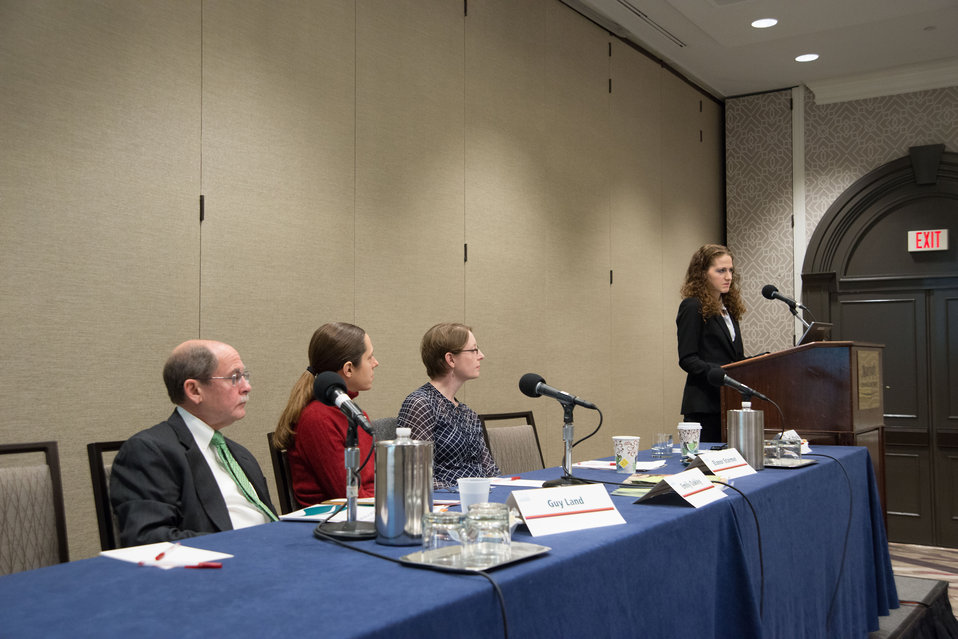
U.S. Department of Agriculture (USDA) Agricultural Marketing Service (AMS) Chief of Staff Sara Eckhouse moderates the plenary panel on Know Your Farmer, Know Your Food: The Past, Present and Future at the Agricultural Outlook Forum on Friday, Feb. 21, 2014 in Arlington, VA. The panel reviewed the goals and objectives of Know Your Farmer, Know Your Food (KYF2) initiative. The panel spoke about how the initiative works; what has been accomplished to date; how local food systems can use KYF2 and other U.S. Department of Agriculture (USDA) programs to improve the supply, distribution, and demand for local foods; how KYF2 and Federal –State-local partnerships work together to promote local food production and distribution; and highlighted the initiative’s work to grow the local food economy in Appalachia. (L to R Appalachian Regional Commission Chief of Staff Guy Land, National Young Farmers Coalition Interim Director Emily Oakley, U.S. Department of Agriculture (USDA) Office of the Secretary Local and Regional Food Systems National Coordinator and Advisor Elanor Starmer, and U.S. Department of Agriculture (USDA) Agricultural Marketing Service (AMS) Chief of Staff Sara Eckhouse).